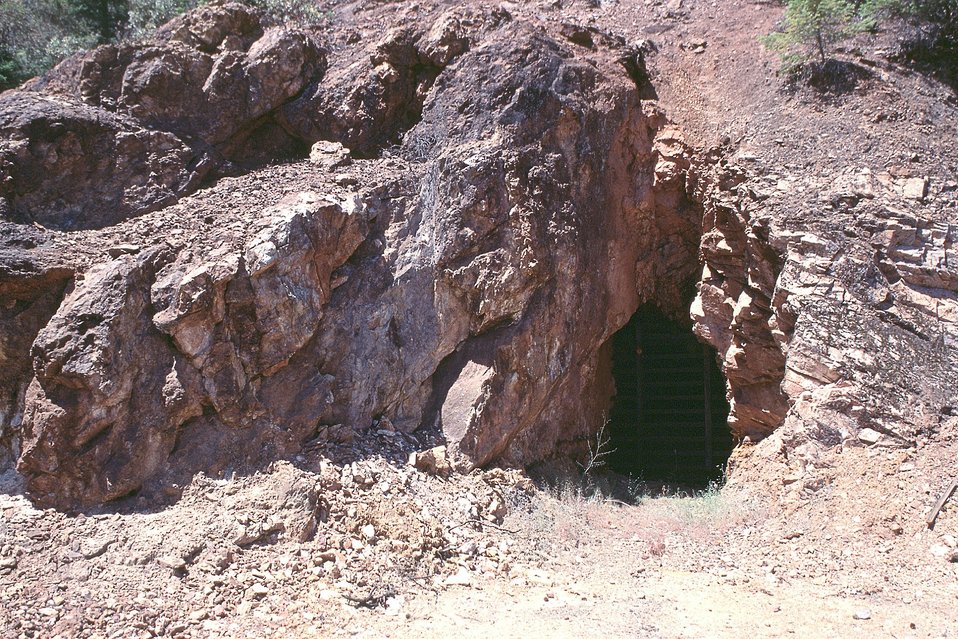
Almeda Mine entrance, Medford District.